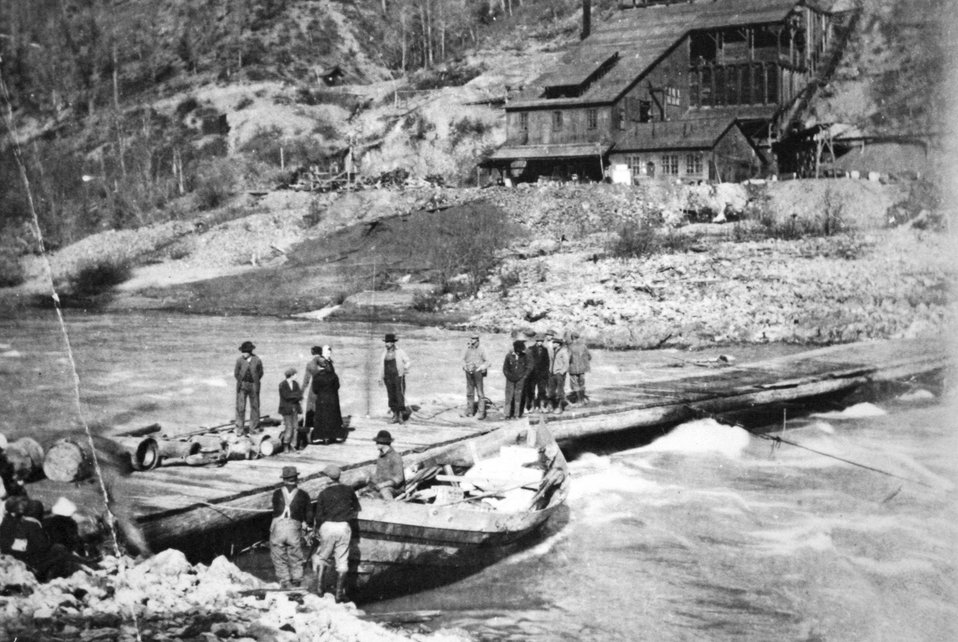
Almeda mine